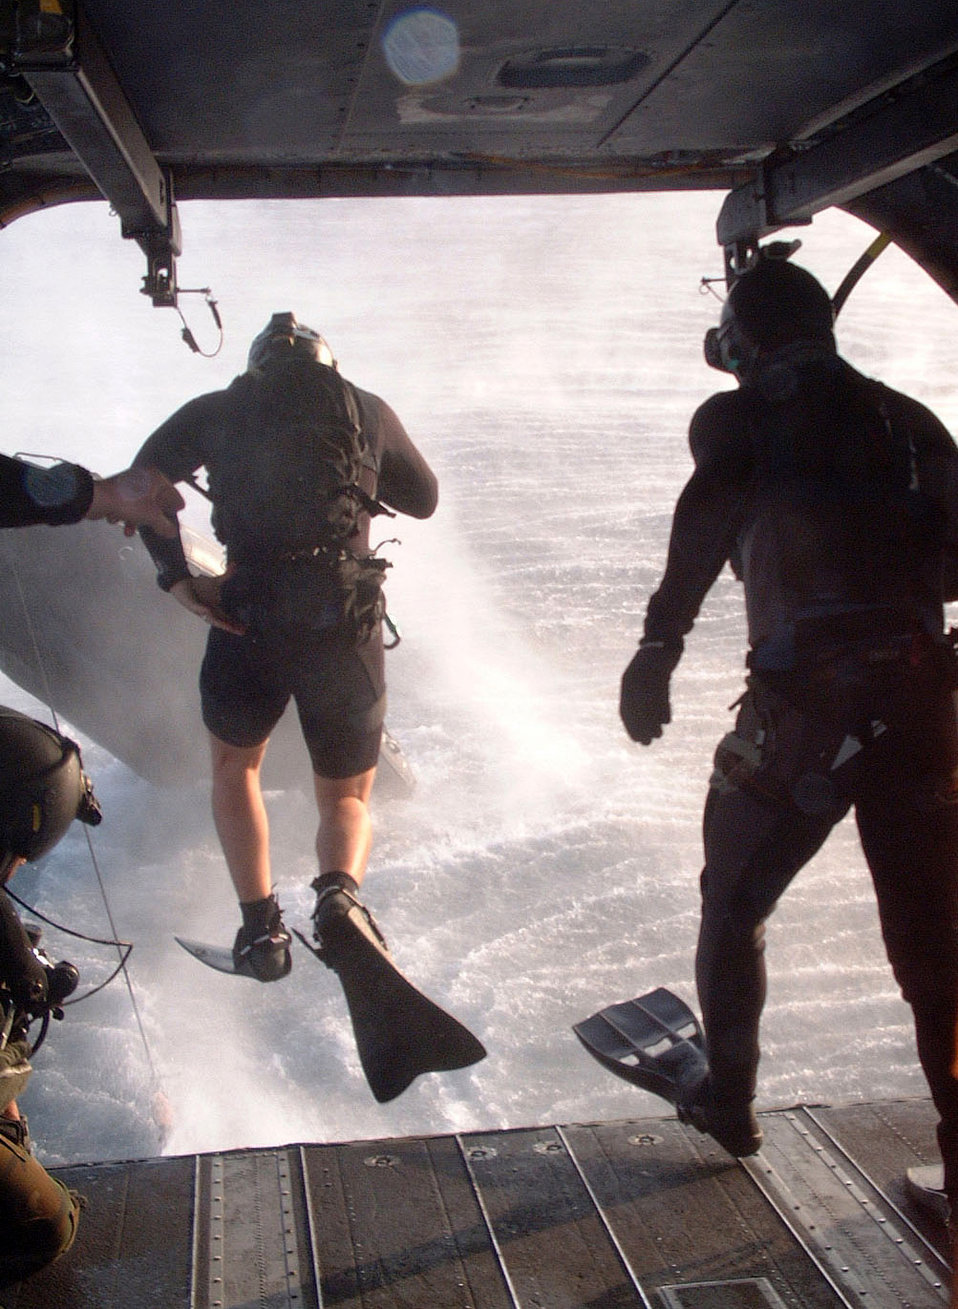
Splish splash

CLARK AIR BASE, Philippines (AFPN) -- Two Air Force pararescuemen jump into Subic Bay during a recent training exercise with Filipino forces. The training was part of Exercise Balance Piston 03-5 and was aimed at increasing the interoperability of the two nations' armed forces. The pararescuemen jumped from an MH-47 Chinook helicopter flown by the U.S. Army's 160th Special Operations Aviation Regiment. The airmen are assigned to the 320th Special Tactics Squadron at Kadena Air Base, Japan.